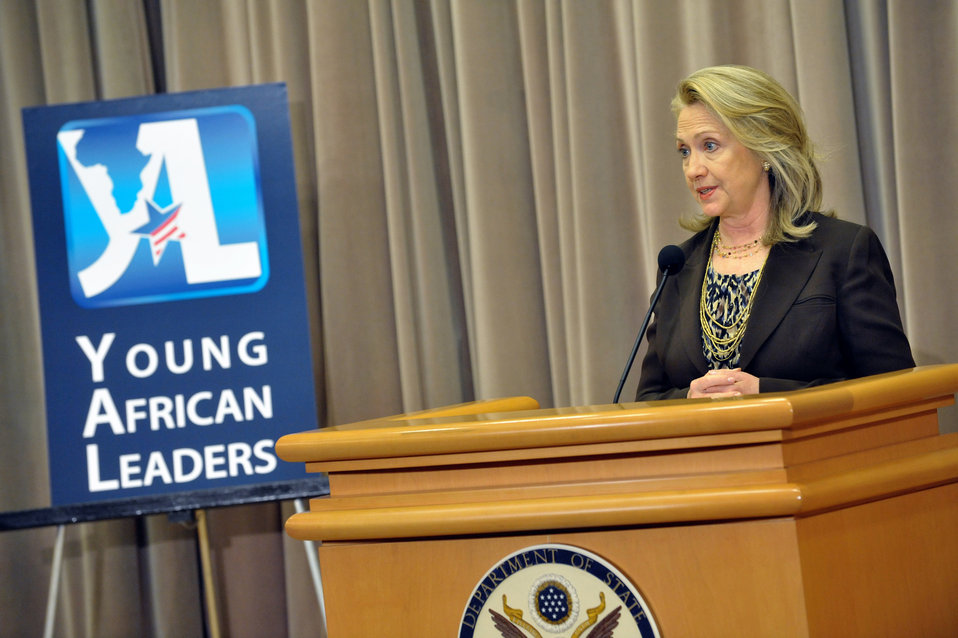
Secretary Clinton Delivers Remarks at the Innovation Summit and Mentoring Partnership with Young African Leaders

U.S. Secretary of State Hillary Rodham Clinton delivers remarks at the Innovation Summit and Mentoring Partnership with Young African Leaders at the Department of State in Washington, D.C. on June 13, 2012.